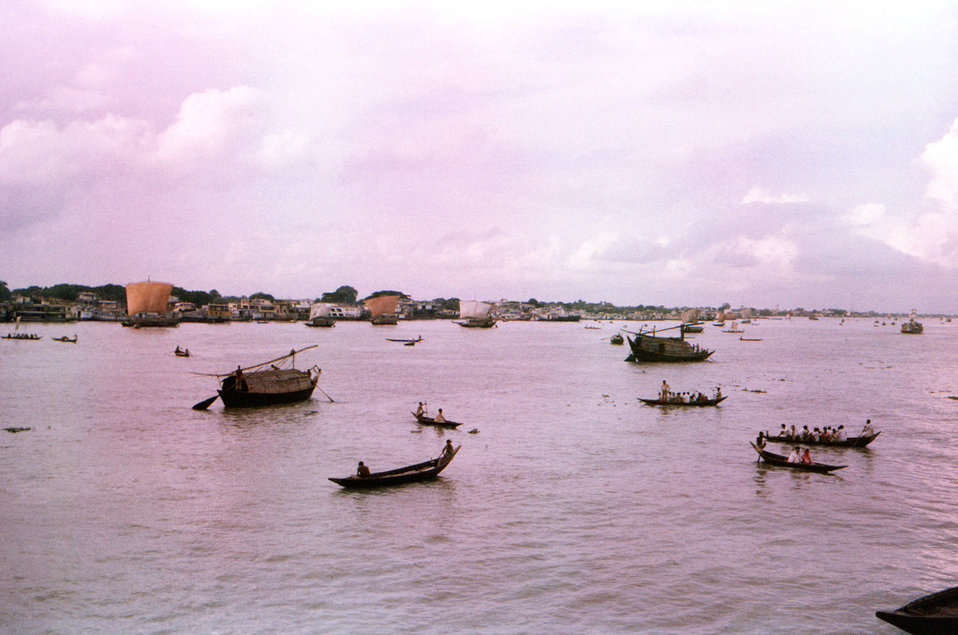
This image depicted a number of 'sampan walas', or ferryboats, as they plied the Meghna River, in the Dhaka District of Bangladesh, en route from Dhaka to Barisal City, which is sometime referred to as the 'Venice of the East', or the 'Venice of Bengal'.